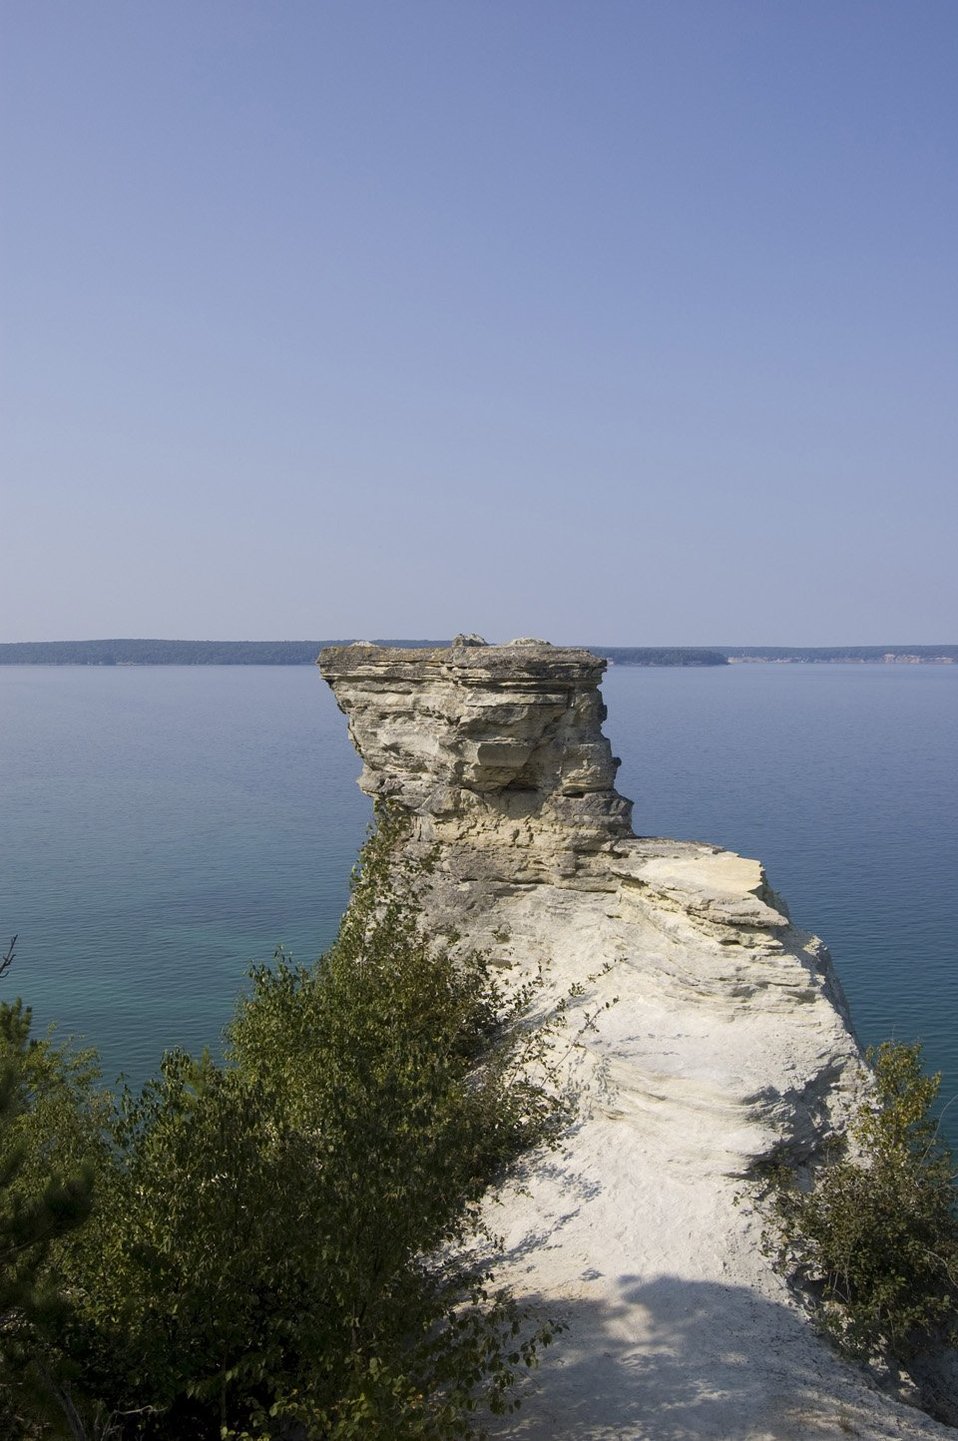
Lake Superior. Pictured Rocks